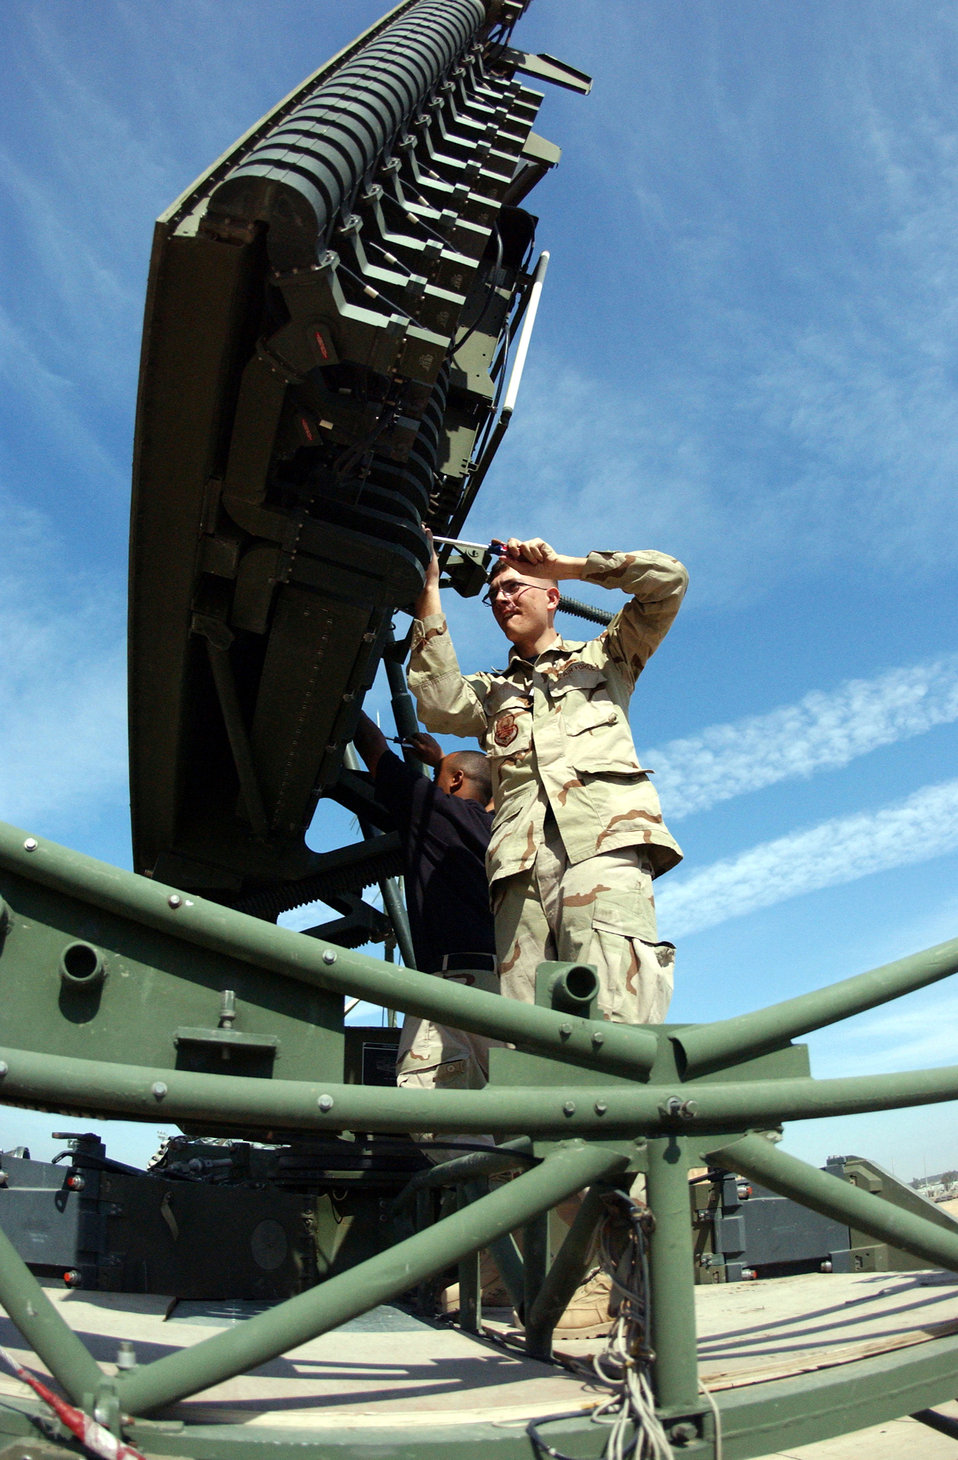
Airmen keep Iraqi airways clear

BALAD AIR BASE, Iraq -- Staff Sgt. Jacob Getzelman (front) and Senior Airman Ronald Adair open a panel in a radar antenna to align the radio frequency receiver. The alignment is critical to radar height accuracy. The Airmen are 727th Expeditionary Air Control Squadron ground radar systems journeymen.